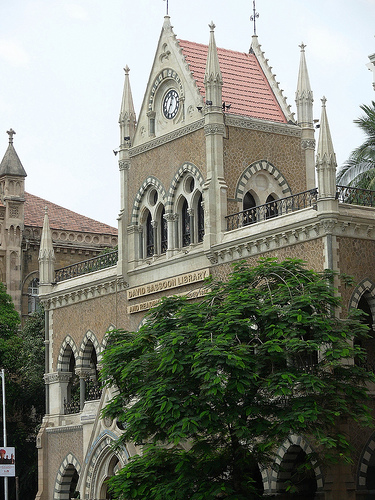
The en:David Sassoon Library is the oldest library in Mumbai